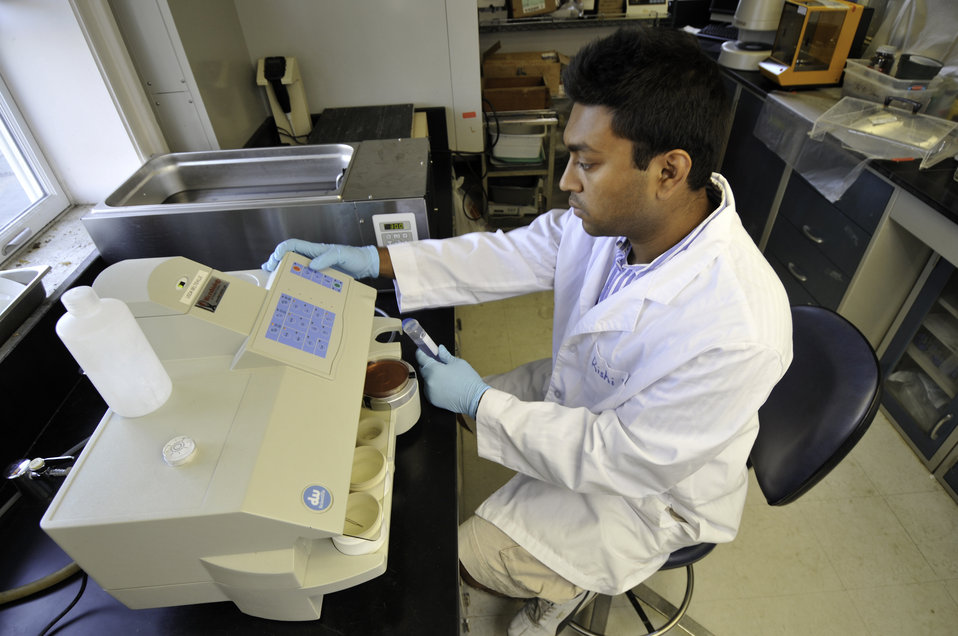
Intern and Senior Environmental Science and Technology major at the University of Maryland, College Park, Maryland Rishi Banerjee performs a spiral plating operation to create a sample on a petri plate containing agar to grow bacteria at the U.S. Department of Agriculture's (USDA) Agricultural Research Service (ARS), Sustainable Agriculture Systems Laboratory, Beltsville Agricultural Research Center, Beltsville, Maryland on July 26, 2010.